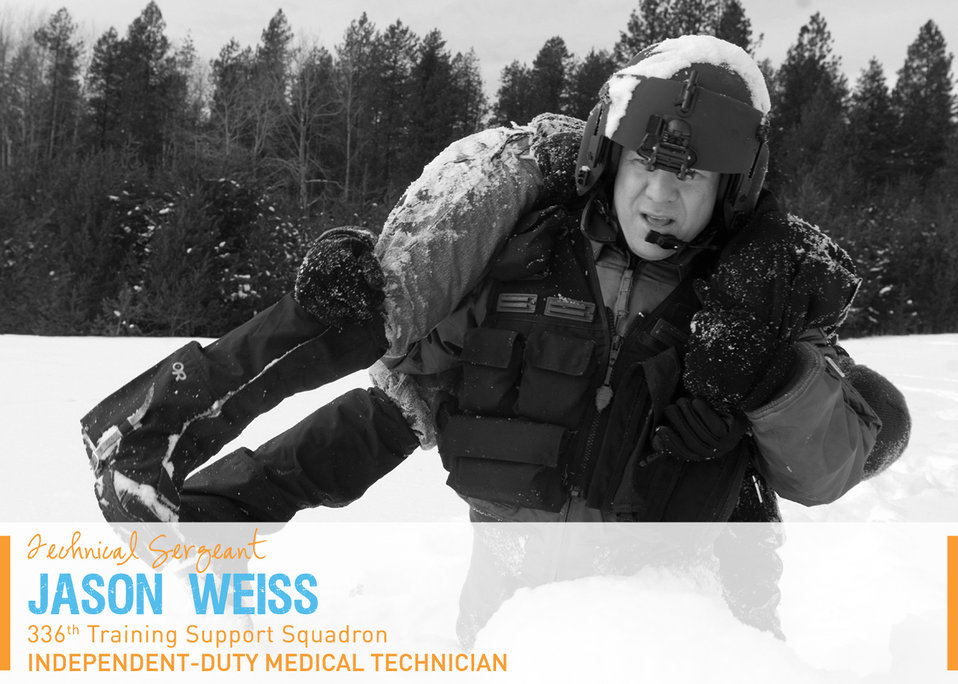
Portraits in Courage Vol 4: Tech. Sgt. Jason Weiss, independent duty medical technician, 336th Training Support Squadron. He rescued a lost and injured hiker in the waist-deep snow of Snoqualmie Pass outside Seattle.